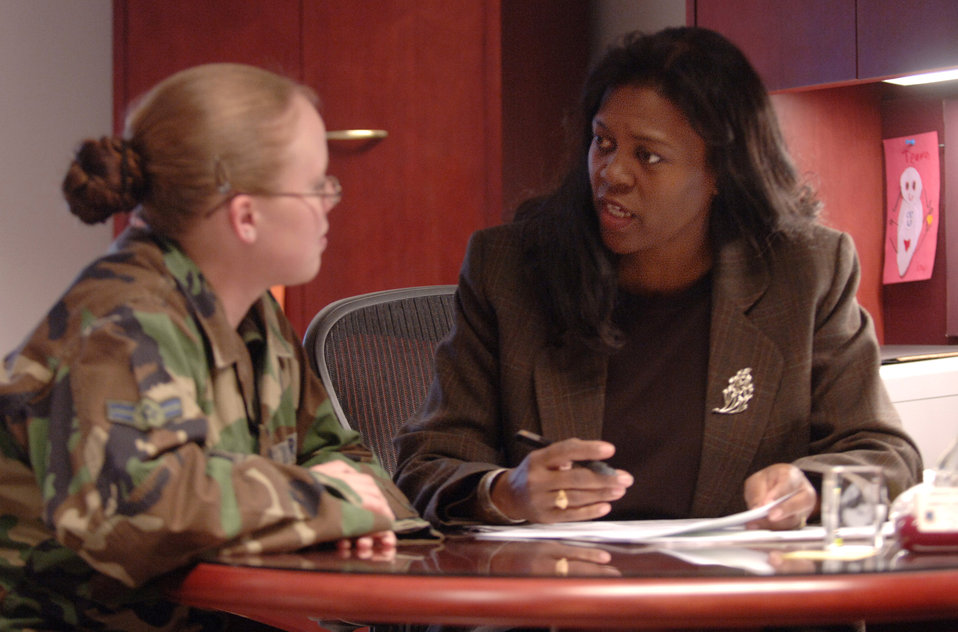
Preserving, remembering the Siksika Nation

Andrea Laboy reviews Airman 1st Class Jesse Ford's education record Nov. 2 in the education office at Ramstein Air Base, Germany. Ms. Laboy is assigned to the 435th Mission Support Squadron and Airman Ford is assigned to the 435th Aerospace Medical Squadron.